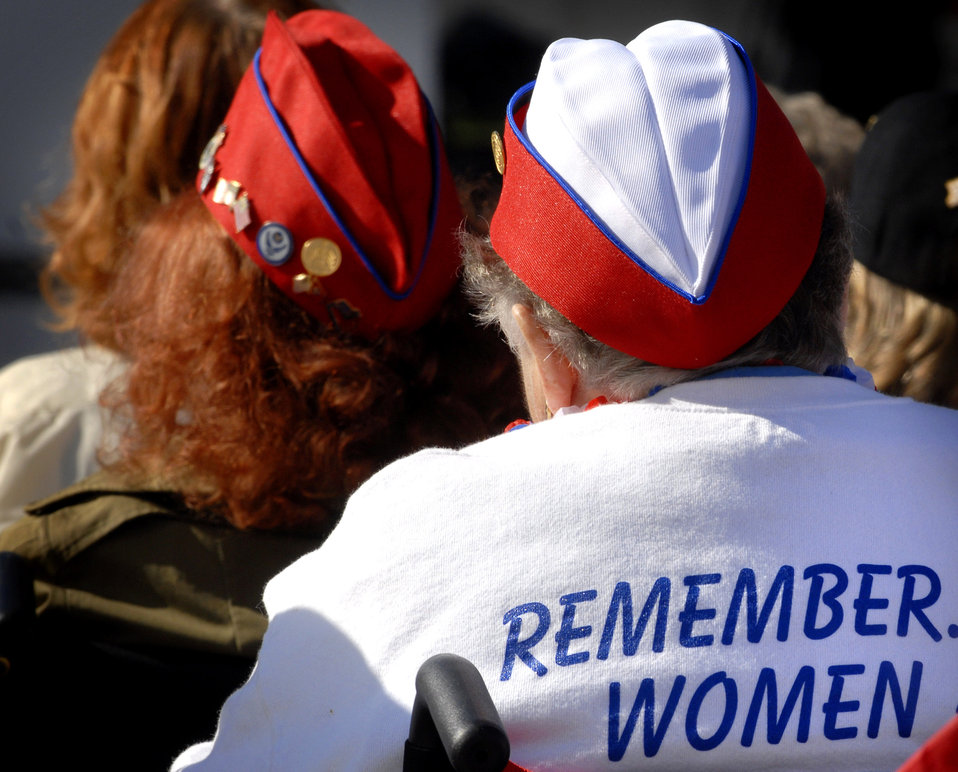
10th anniversary of WIMSA

Women veterans wear shirts declaring,